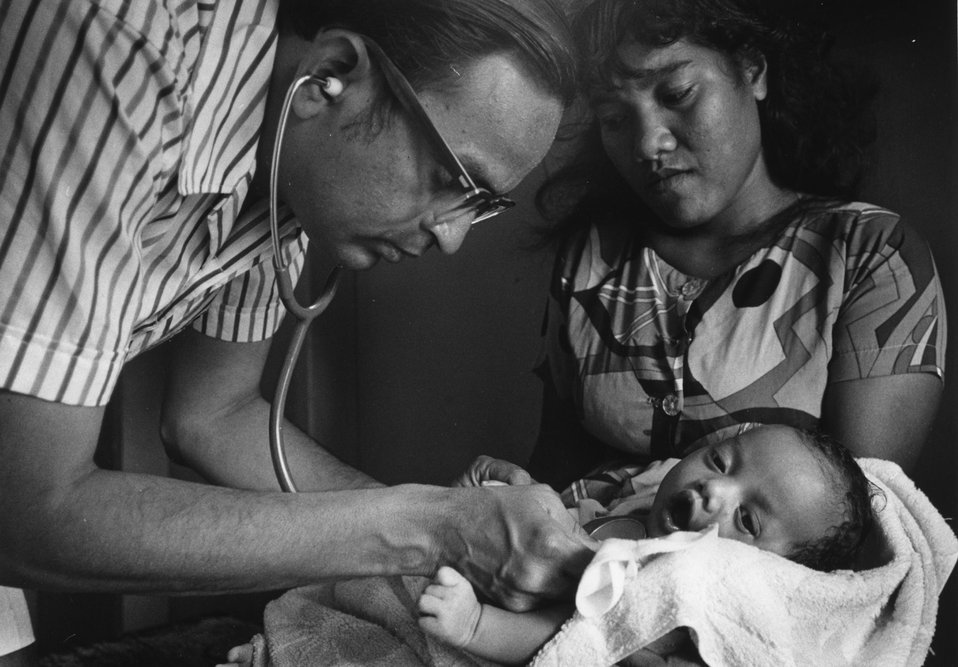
Medical team conducting annual medical examinations of Marshallese people who were exposed to radioactive fallout from an atmospheric nuclear weapons test in 1954

.